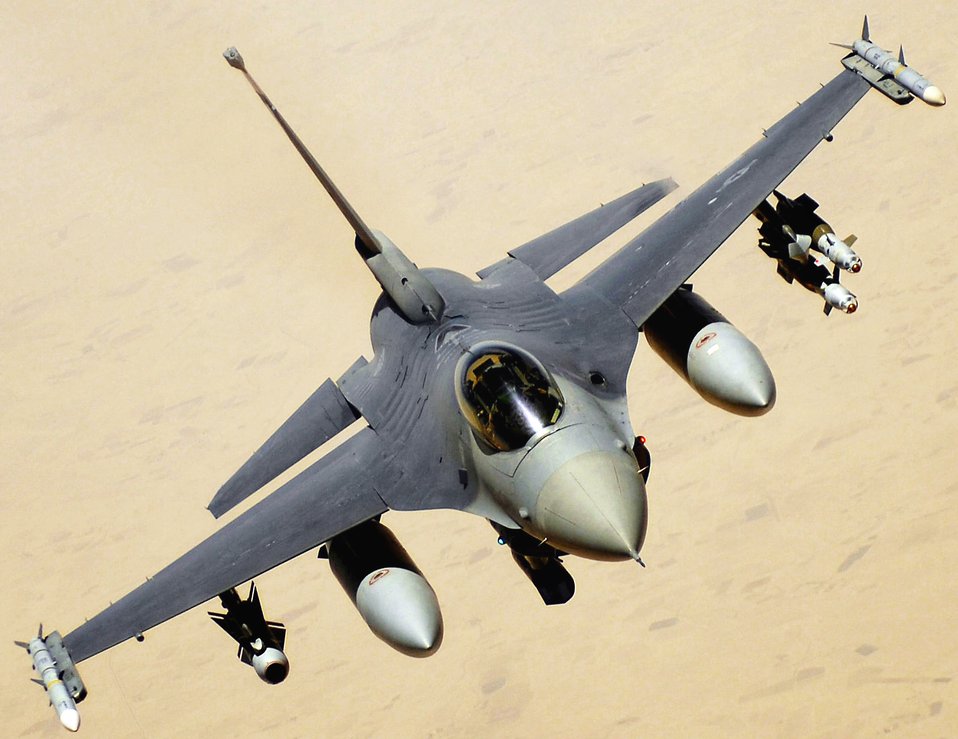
Ready to strike

An F-16 Fighting Falcon aircraft returns to the fight after receiving fuel June 10 during a mission over Iraq. The F-16 is assigned to Balad Air Base, Iraq, and is deployed from Hill Air Force Base, Utah.